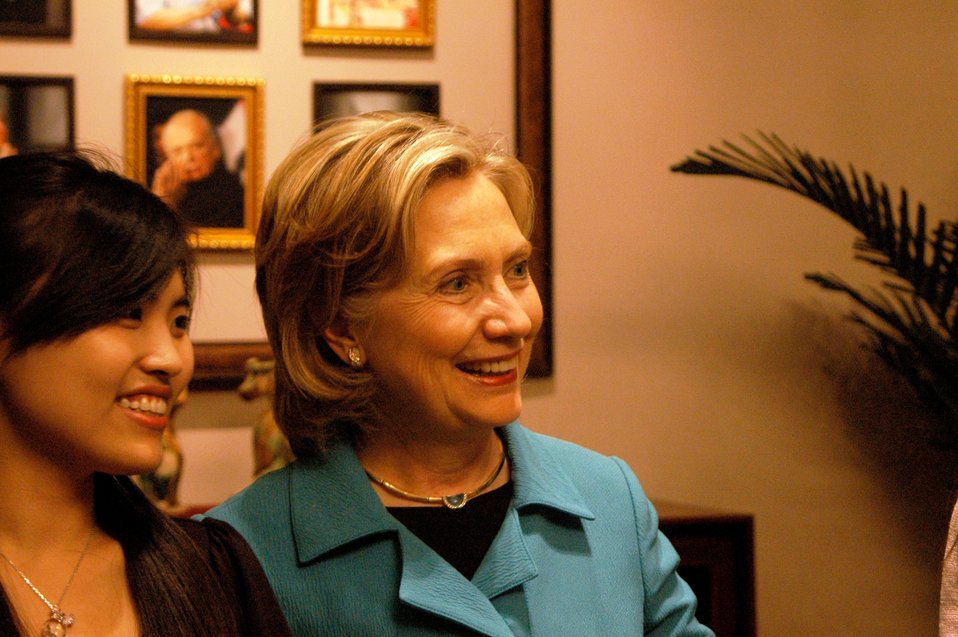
Secretary Clinton Meets With Chinese Women Civil Society Leaders

U.S. Secretary of State Hillary Rodham Clinton meets with Chinese Women Civil Society Leaders in Beijing, China, May 26, 2010.